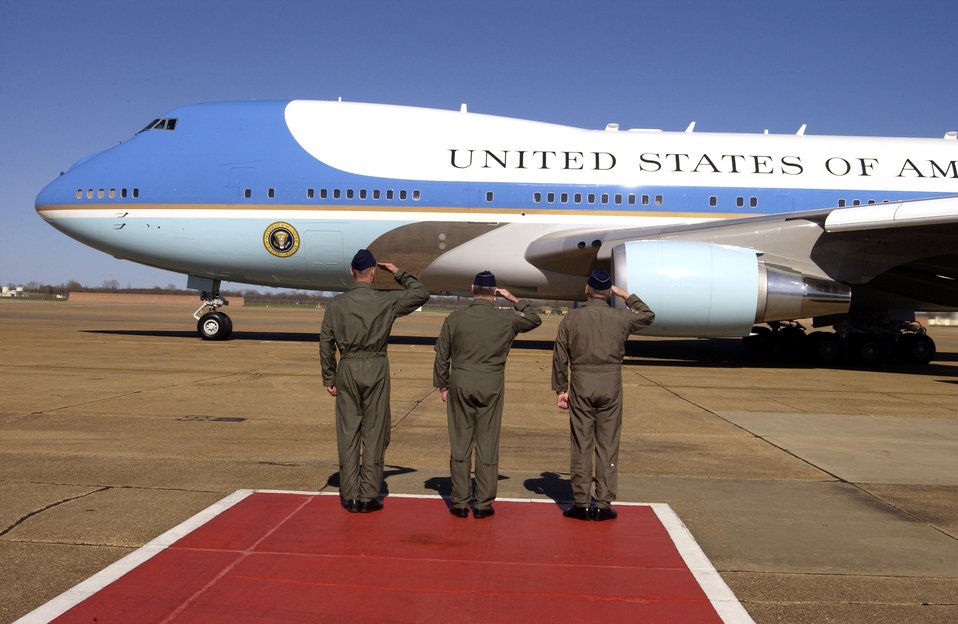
Bush breezes through Barksdale

BARKSDALE AIR FORCE BASE, La. -- Base leaders here bid farewell to President George W. Bush as Air Force One prepares to depart. They are (from left) Col. Michael Moeller, 2nd Bomb Wing commander; Brig. Gen. Jack Ihile, 917th Wing commander; and Lt. Gen. Bruce Carlson, 8th Air Force commander. President Bush had attended a town hall meeting in nearby Shreveport on March 11.